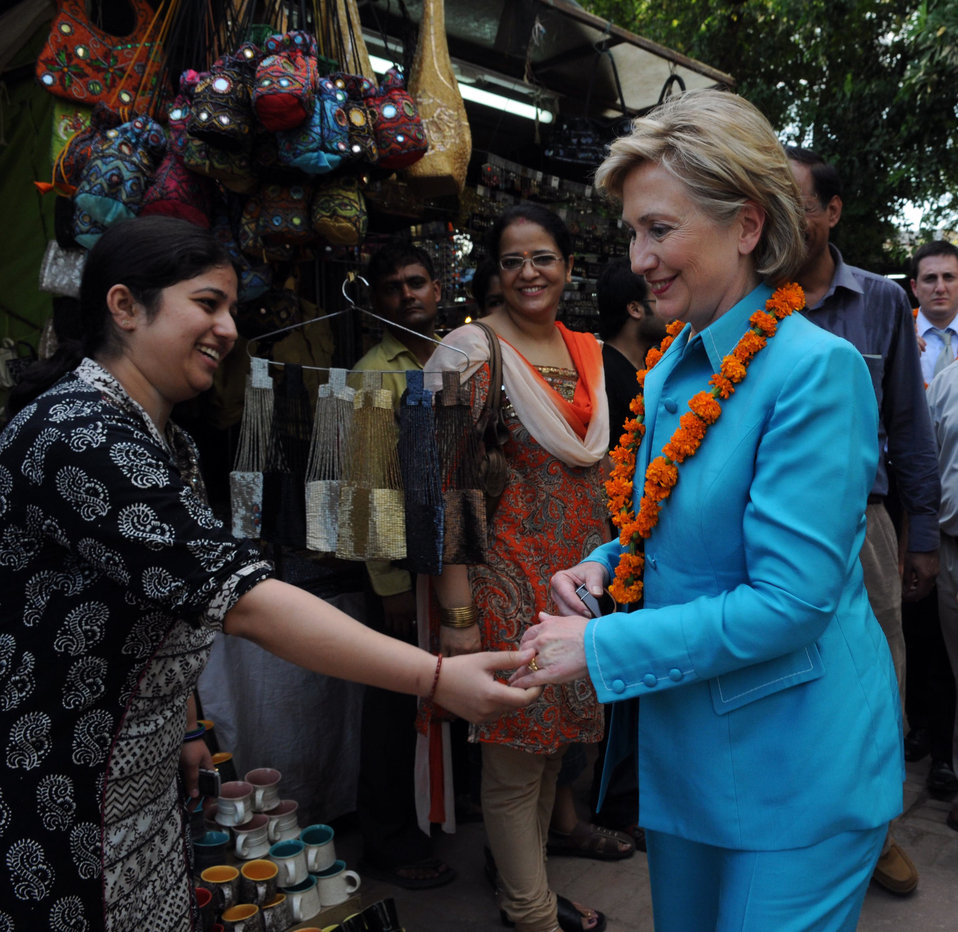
Secretary Clinton Visits Local Shops in New Delhi

U.S. Secretary of State Hillary Rodham Clinton shops at Dilli Haat, New Delhi, India July 19, 2009.